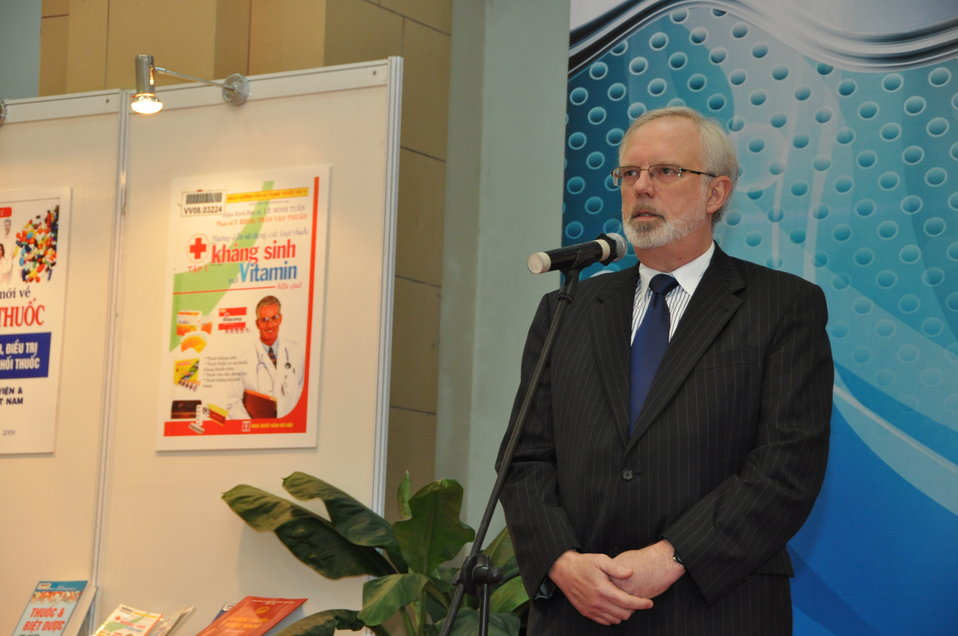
U.S. Ambassador David Shear opens safe medicine exhibition in Hanoi

Safe Medicine Exhibition